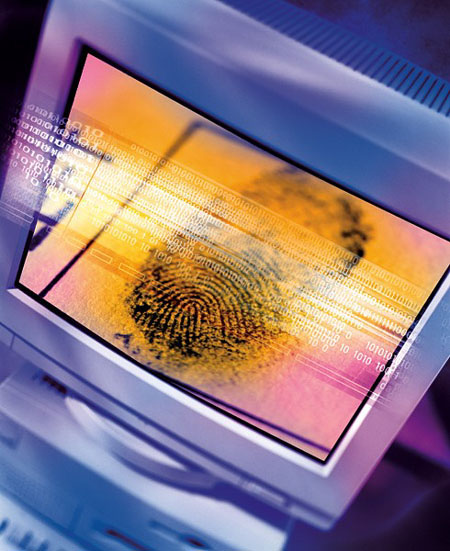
Biometrics Research

ITL has been conducting biometrics research for more than 30 years